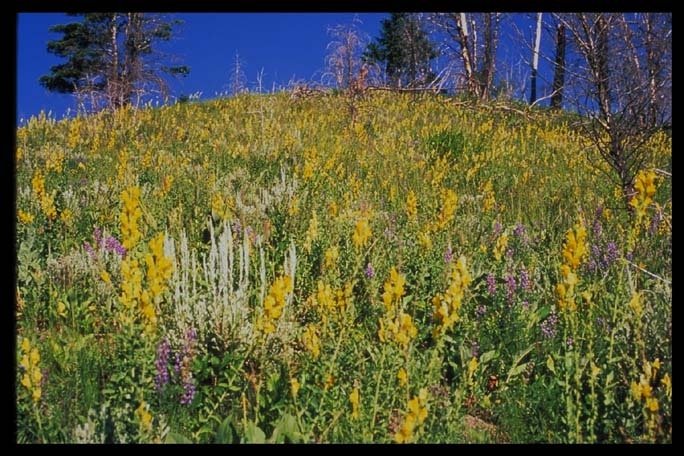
Landscape